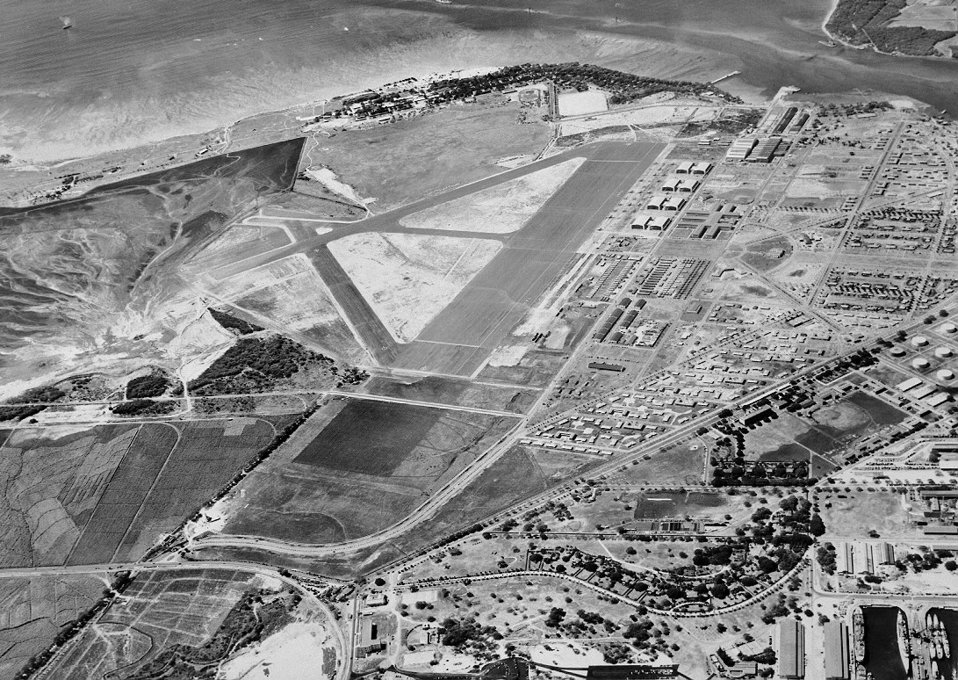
Hickam aerial-view

Hickam Field, Hawaii, as it looked in May, 1940.